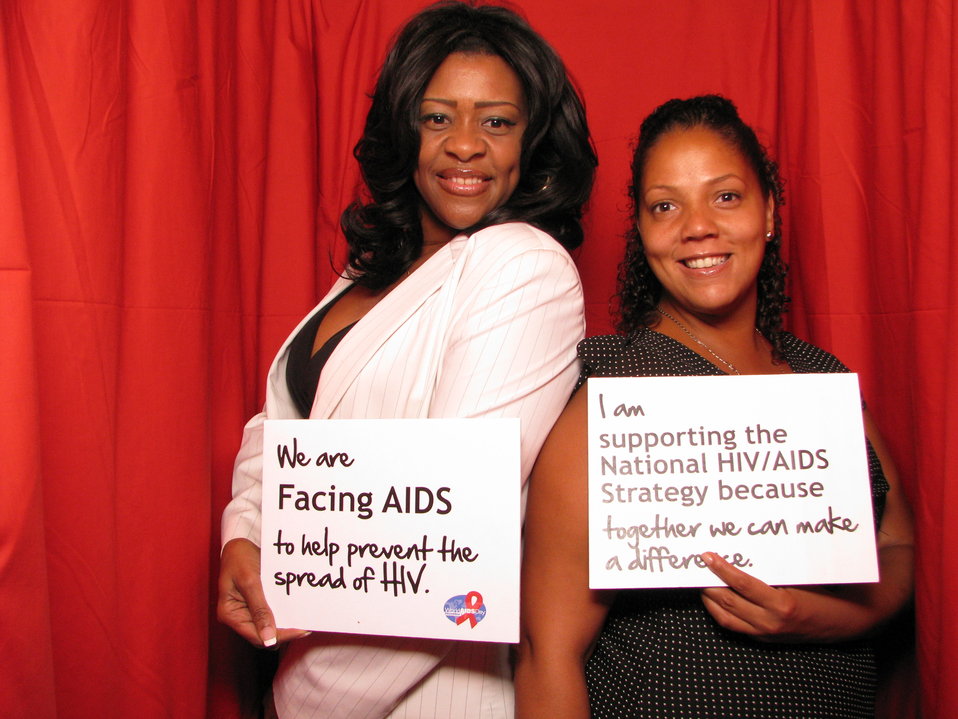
We are FACING AIDS to help prevent the spread of HIV. I am supporting the National HIV/AIDS Strategy because together we can make a difference.

From the AIDS.gov photo booth at the U.S. Conference on AIDS, September 2010 (Orlando, FL).